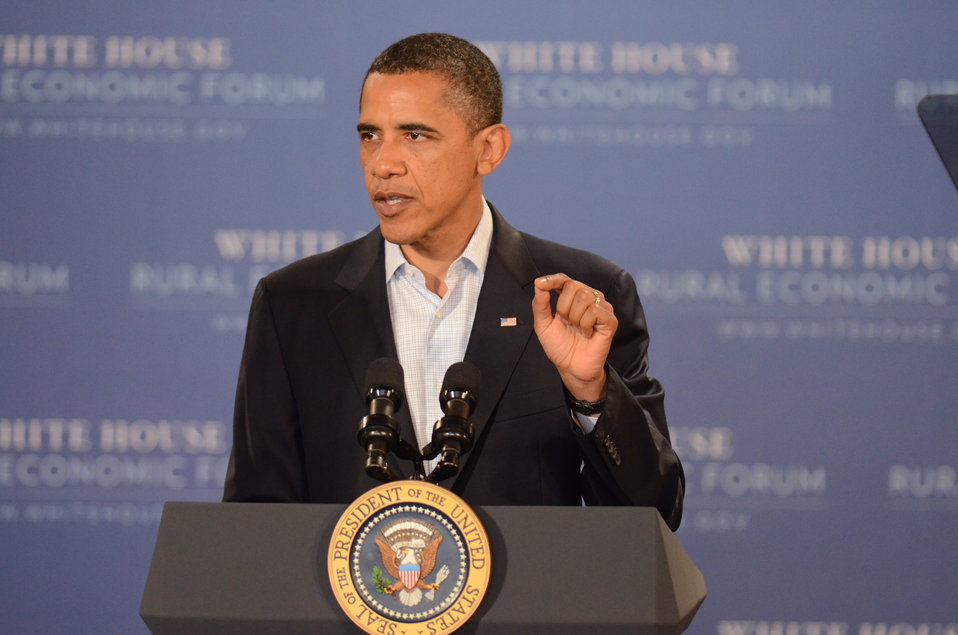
President Barack Obama speaking at the Northeast Iowa Community College, for a White House Rural Economic Forum on Tuesday, Aug. 16, 2011. The President’s visit will focus on agriculture’s contribution to the national economy, and how to create more jobs in rural America.